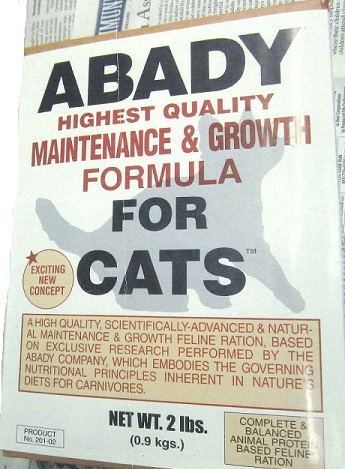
RECALLED - Cat Food

April 9, 2014 - Product Recall - The Robert Abady Dog Food Co., LLC Recalls 'Abady Highest Quality Maintenance & Growth Formula for Cats' Because of Possible Health Risk.